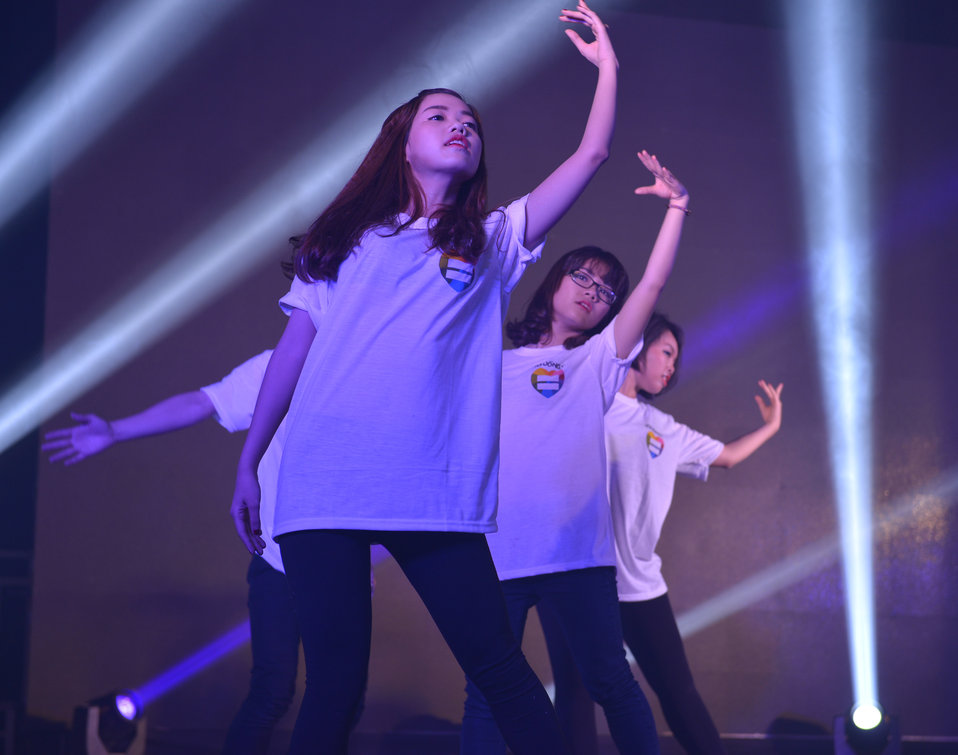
Performance at iSee LGBT Event

USAID Vietnam